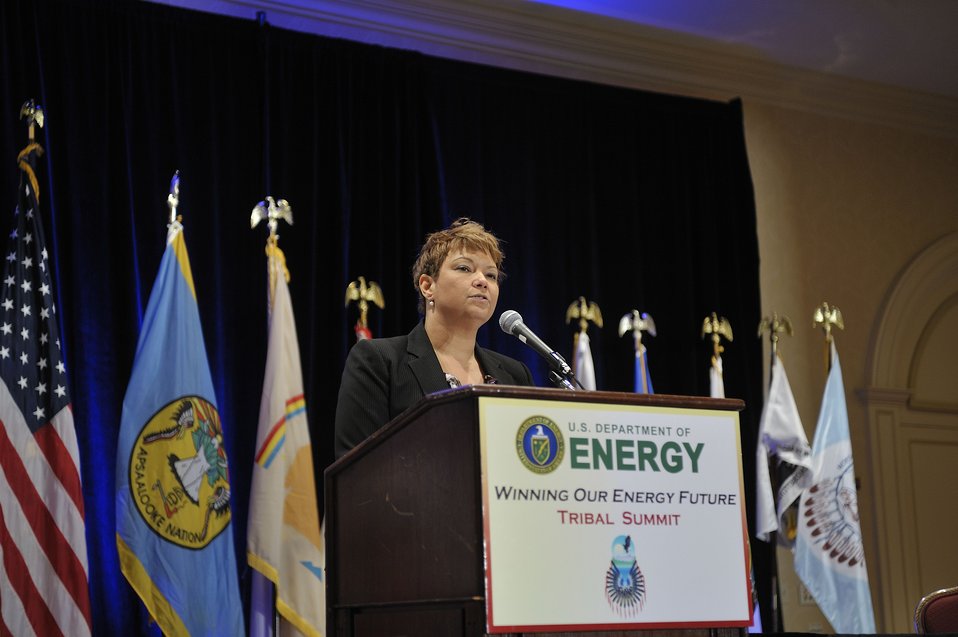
Tribal Energy Summit

EPA Administrator Lisa Jackson addresses DOE Tribal Summit during morning Keynote Address